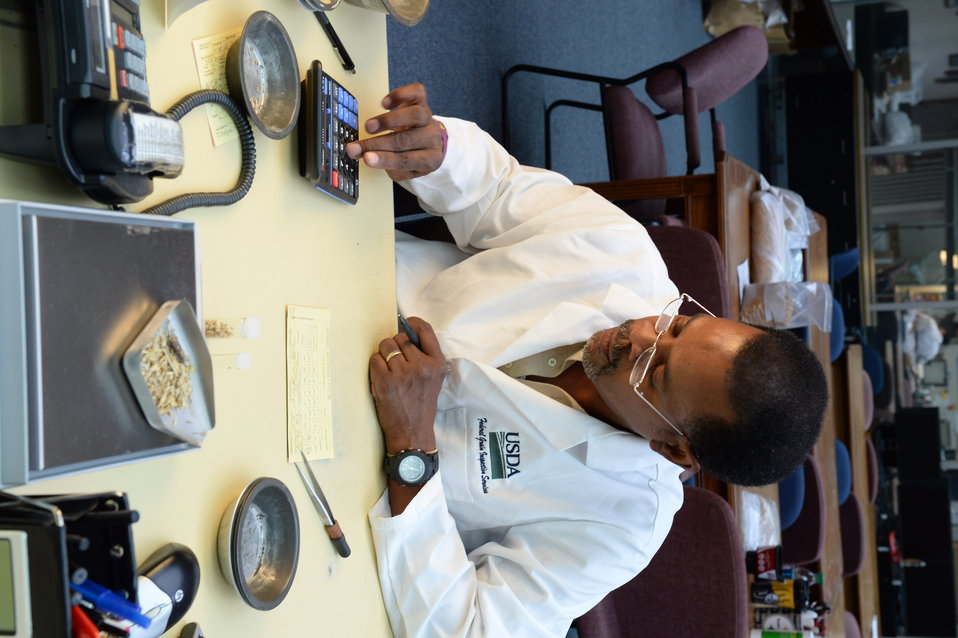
A U.S. Department of Agriculture (USDA) Grain Inspection, Packers and Stockyards Administration (GIPSA) Federal Grain Inspection Service (FGIS) scientist tests wheat at the FGIS inspection laboratory in New Orleans, LA on Monday, Nov. 18, 2013.